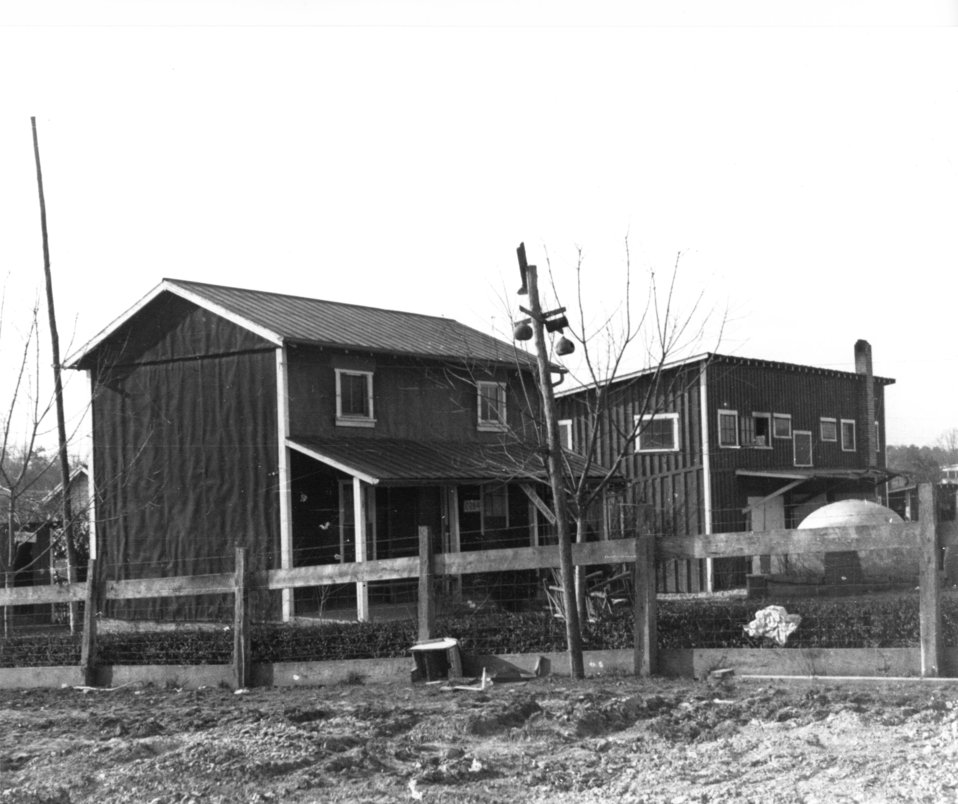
Early settlers at Oak Ridge